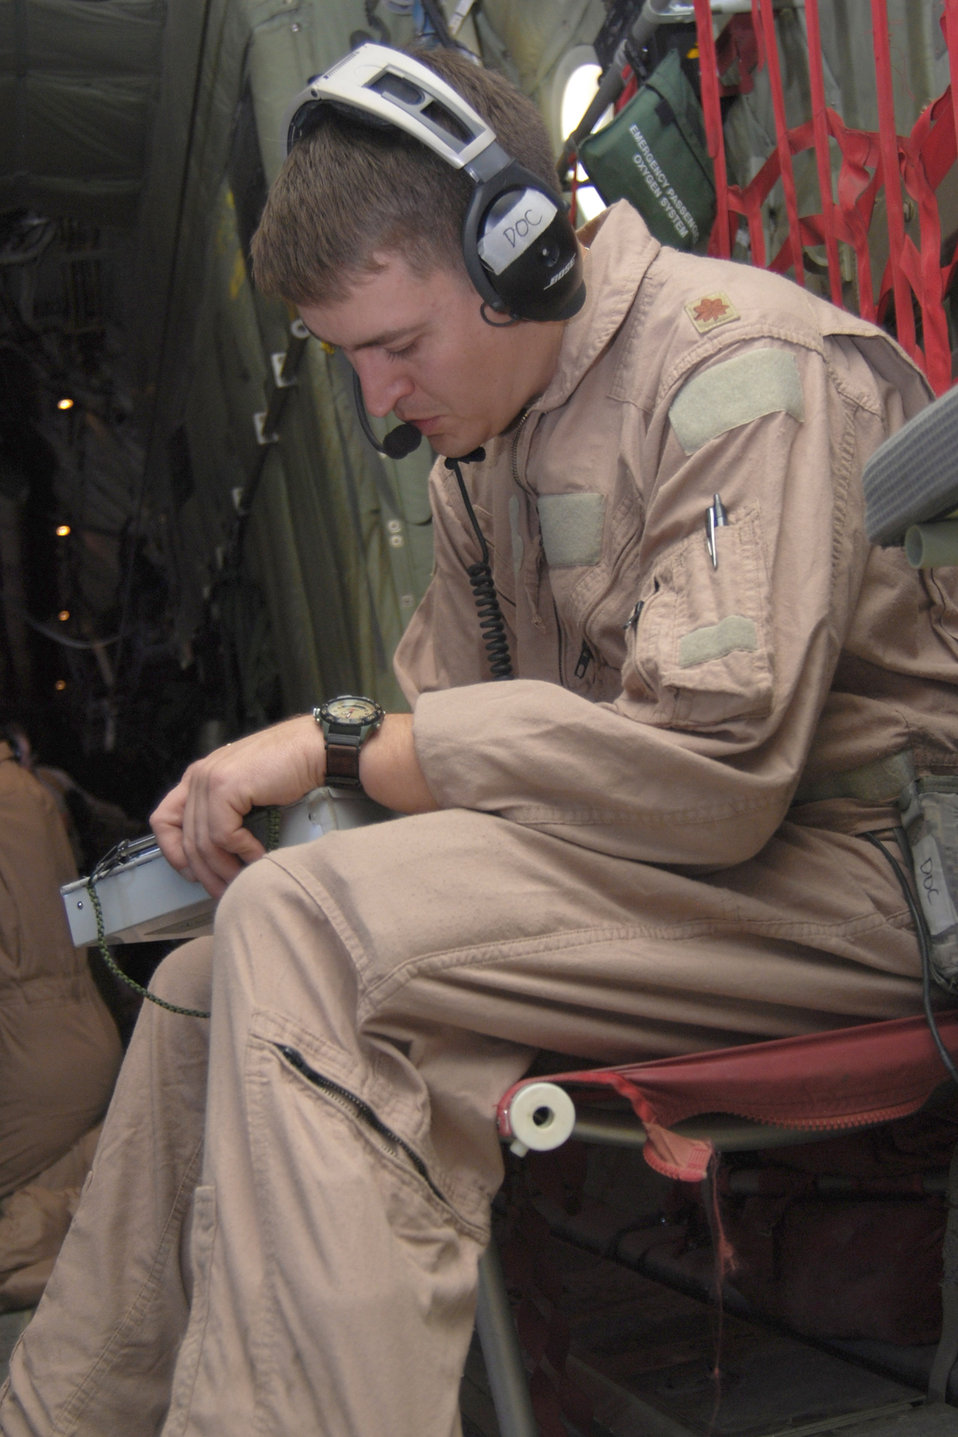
451st AEW CCATT

Critical care air transport team members Capt. John Eggert and Master Sgt. Rich Pakula setup medical equipment for their patient inside a C-130H Hercules Jan. 5, 2011, at Kandahar Airfield, Afghanistan. The CCATT is a specialized three-person team that recreates an intensive care unit environment within an aircraft during aeromedical evacuations. Captain Eggert is a nurse and Sergeant Pakula is a respiratory technician assigned to the 451st Expeditionary Aeromedical Evacuation Squadron.